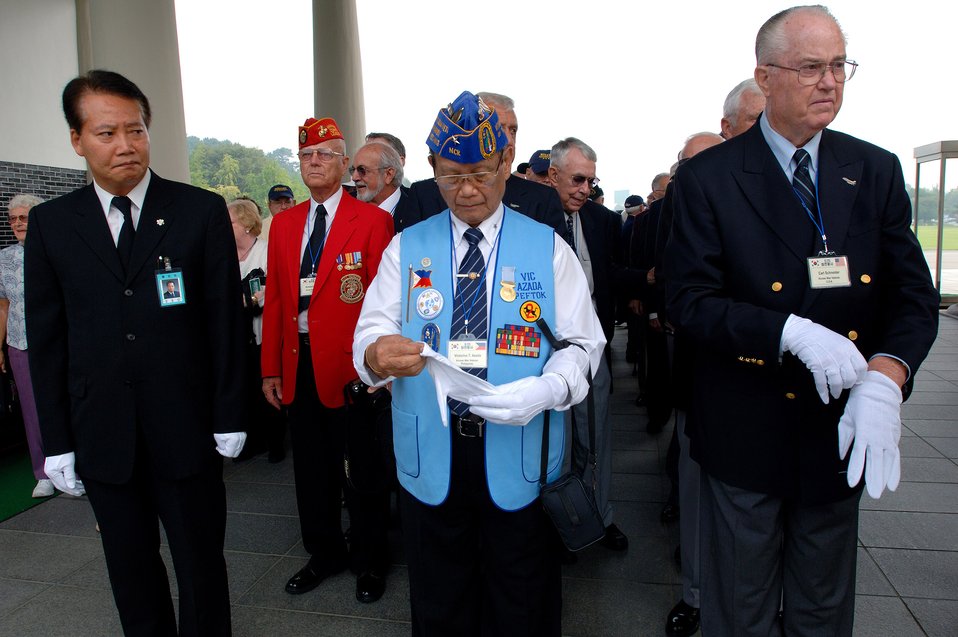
Korean War veterans give sage advice to Airmen

Retired Maj. Gen. Carl G. Schneider (right) and retired Philippines Gen. Vic Azada (center) prepare for a wreath-laying ceremony at the South Korean National Cemetery along with fellow Korean War veterans Sept. 12. The South Korean government's Revisit Korea program invites war veterans each year to come to South Korea to honor the men and woman from 21 countries who served during the Korean War. Nearly 25,000 veterans have participated in this program since 1975.